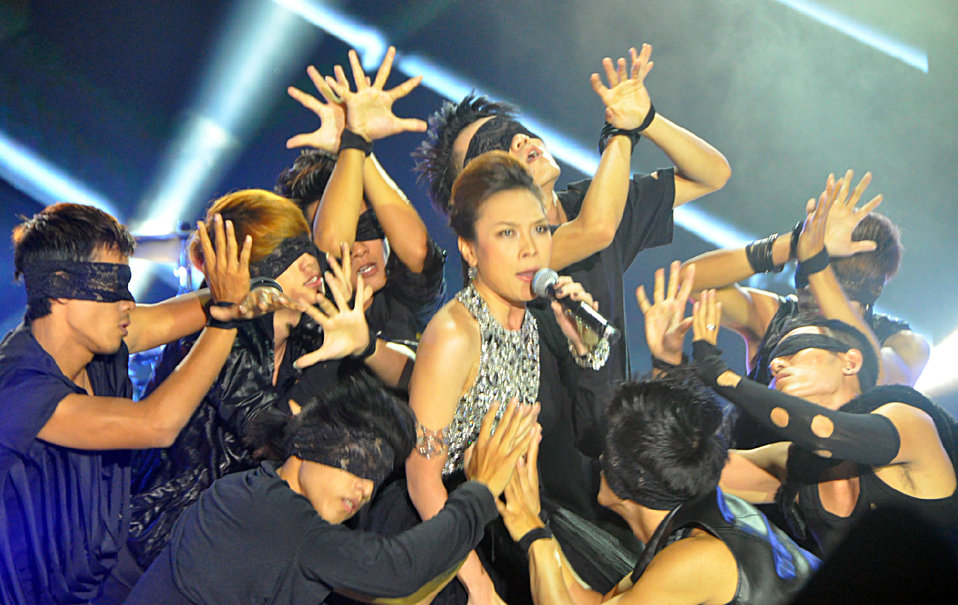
My Tam Performs at MTV EXIT Concert in Hanoi, May 26, 2012